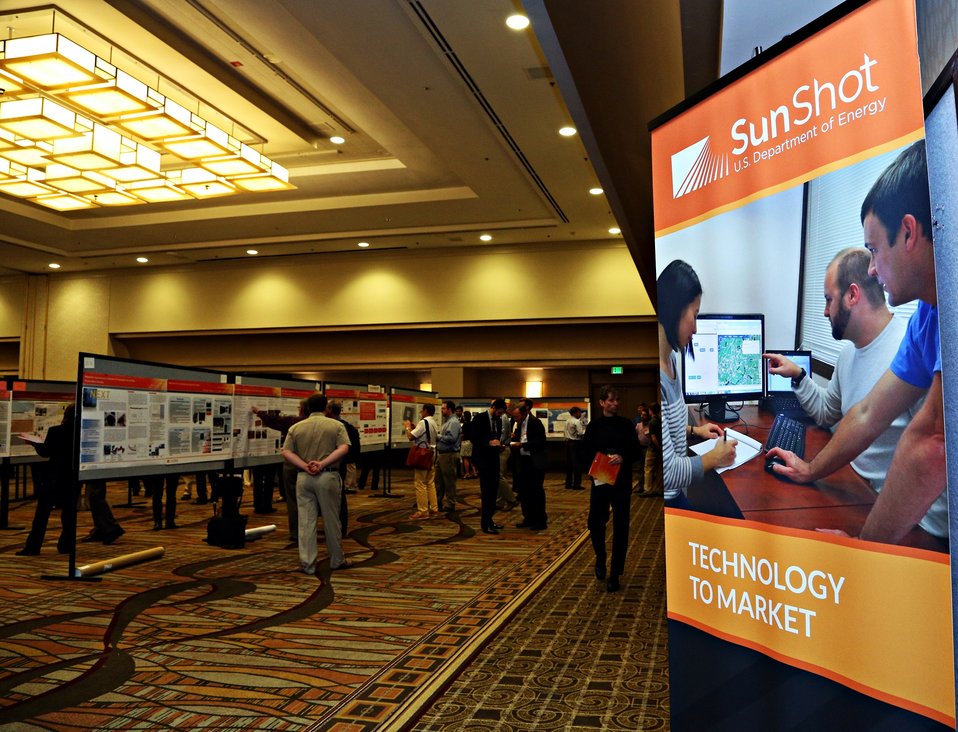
Tech Forum 20

The Tech Forum floor.